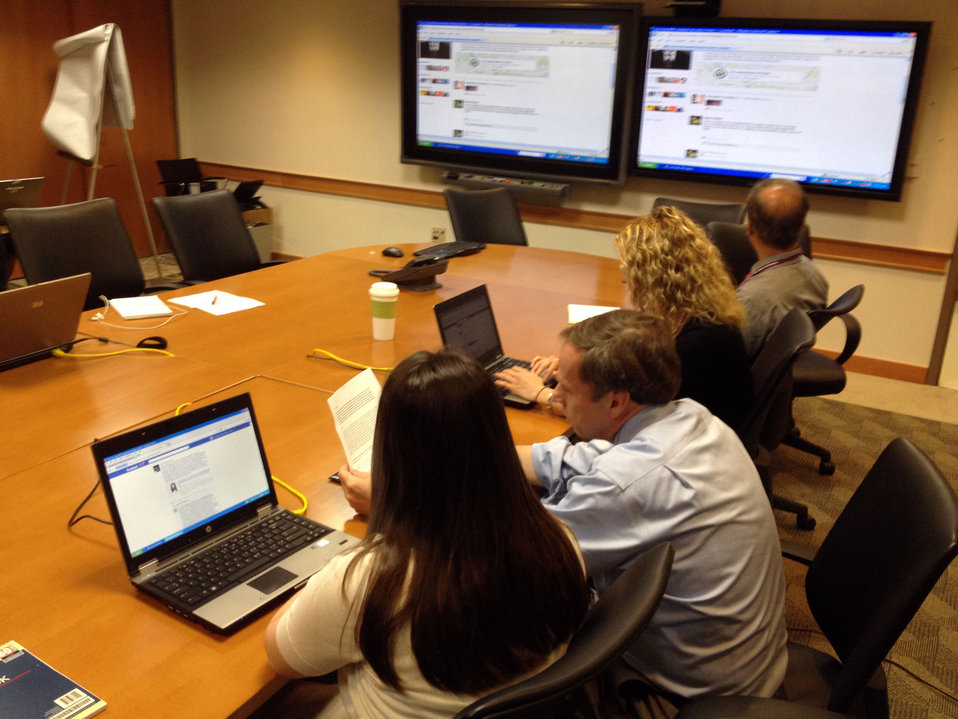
Assistant Secretary Posner Participates in a Live Facebook Chat

Assistant Secretary of State for Democracy, Human Rights and Labor Michael Posner responds to your questions live in a Facebook chat on May 25, 2012.